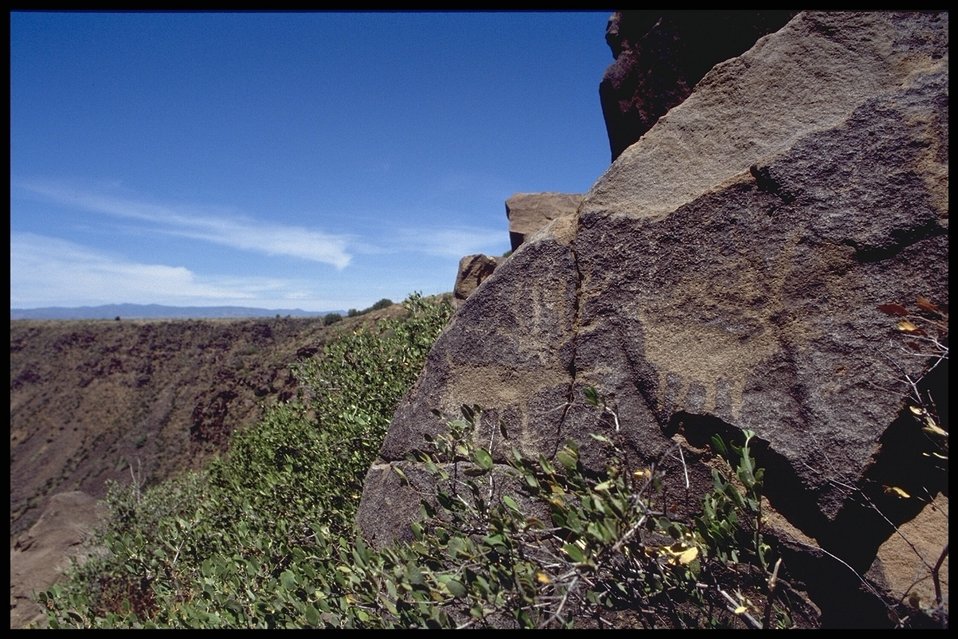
Petroglphs (Rock Art) can be found throughout the 71,000 Acres that make up the Agua Fria National Monument.